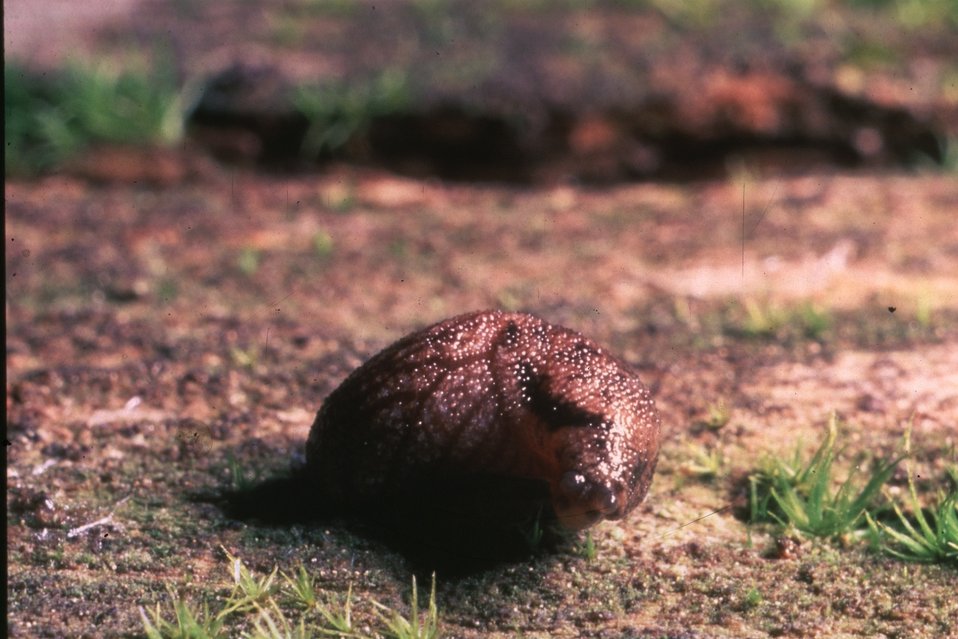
Papillose Tail-dropper (Prophysaon dubium)